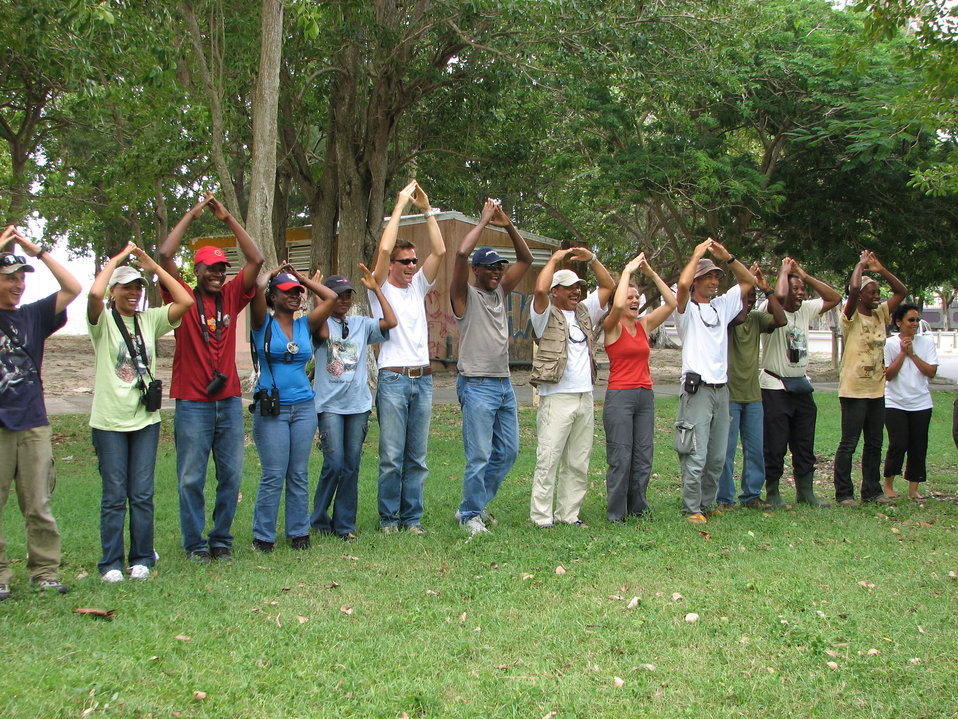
Conservation education for birds in the Caribbean. Supported by the Neotropical Migratory Bird Conservation Act.